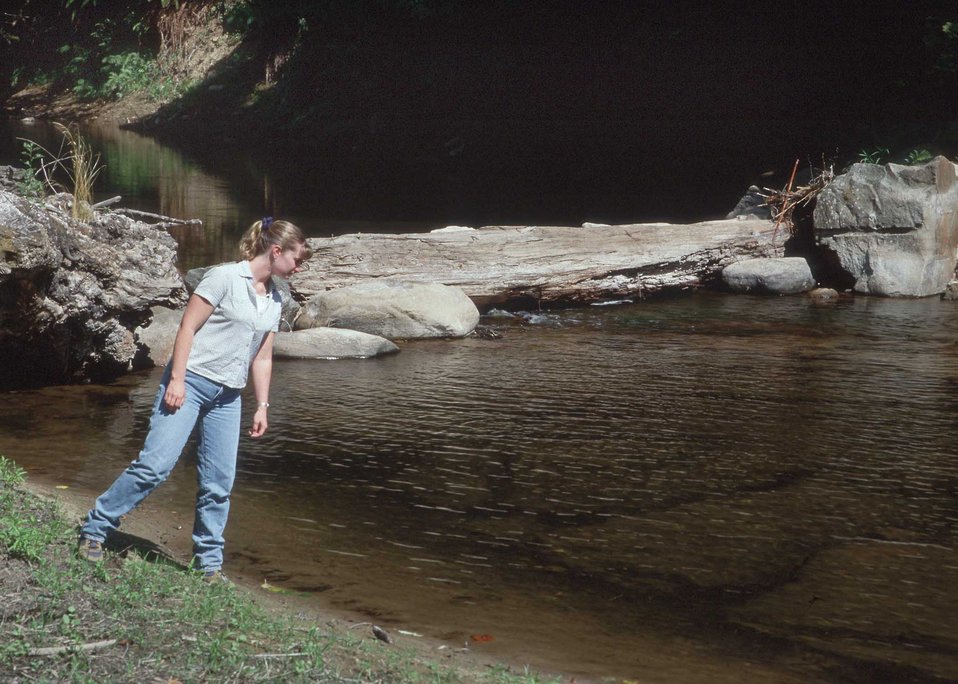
Recreationalist observing fish in natural habitat.